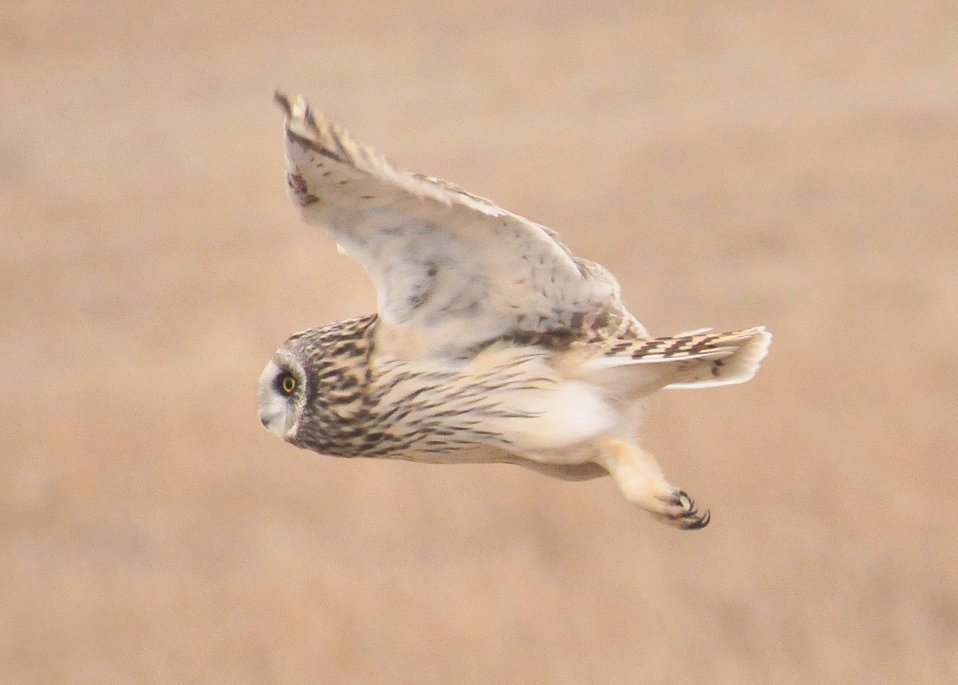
Short eared Owl Lacreek NWR